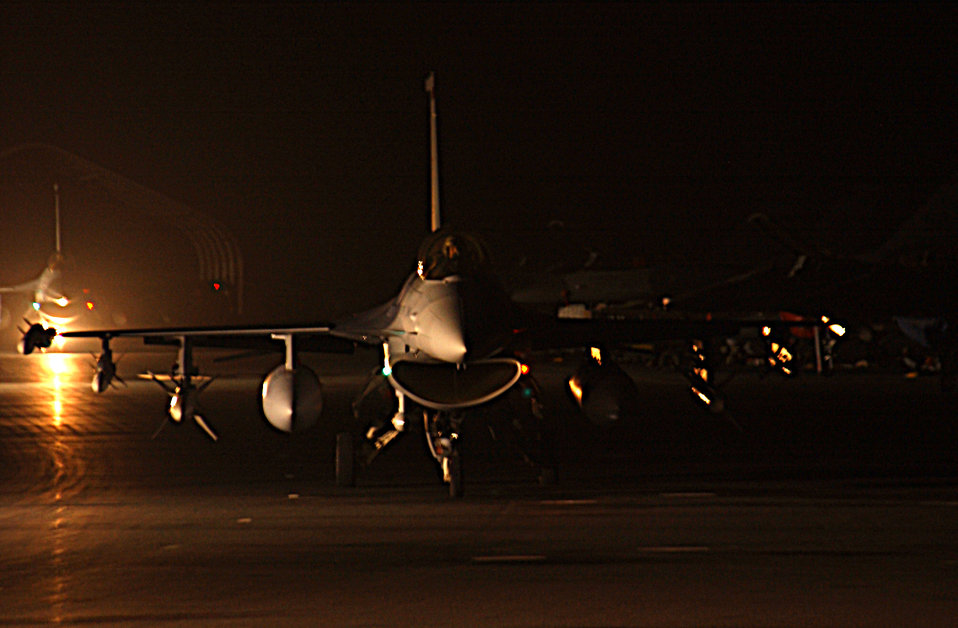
F-16 by night

OPERATION IRAQI FREEDOM -- F-16CJ's return to a forward deployed base in Southwest Asia supporting Operation Iraqi Freedom.